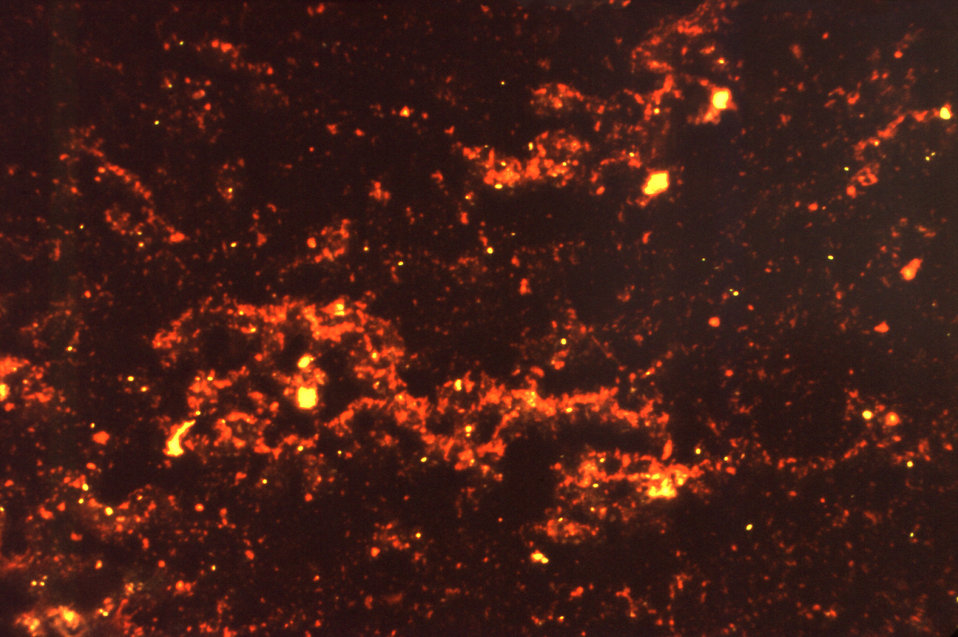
Magnified 125X, this fluorescent acid-fast stained (Smithwick) photomicrograh revealed the presence of Mycobacterium tuberculosis bacteria in a sputum smear.